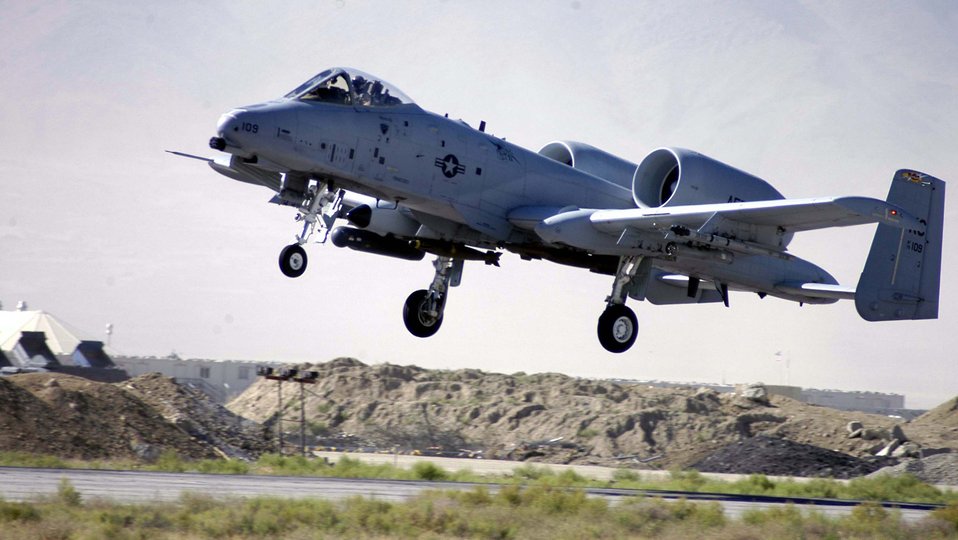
Bagram A-10s surge for summer offensives

Col. Tony Johnson takes off in an A-10 Thunderbolt II from Bagram Air Base, Afghanistan, in June. Colonel Johnson is deployed from Whiteman Air Force Base, Mo., where he commands the 442nd Operations Group. He is serving as the commander of the 455th Expeditionary Operations Group while at Bagram.